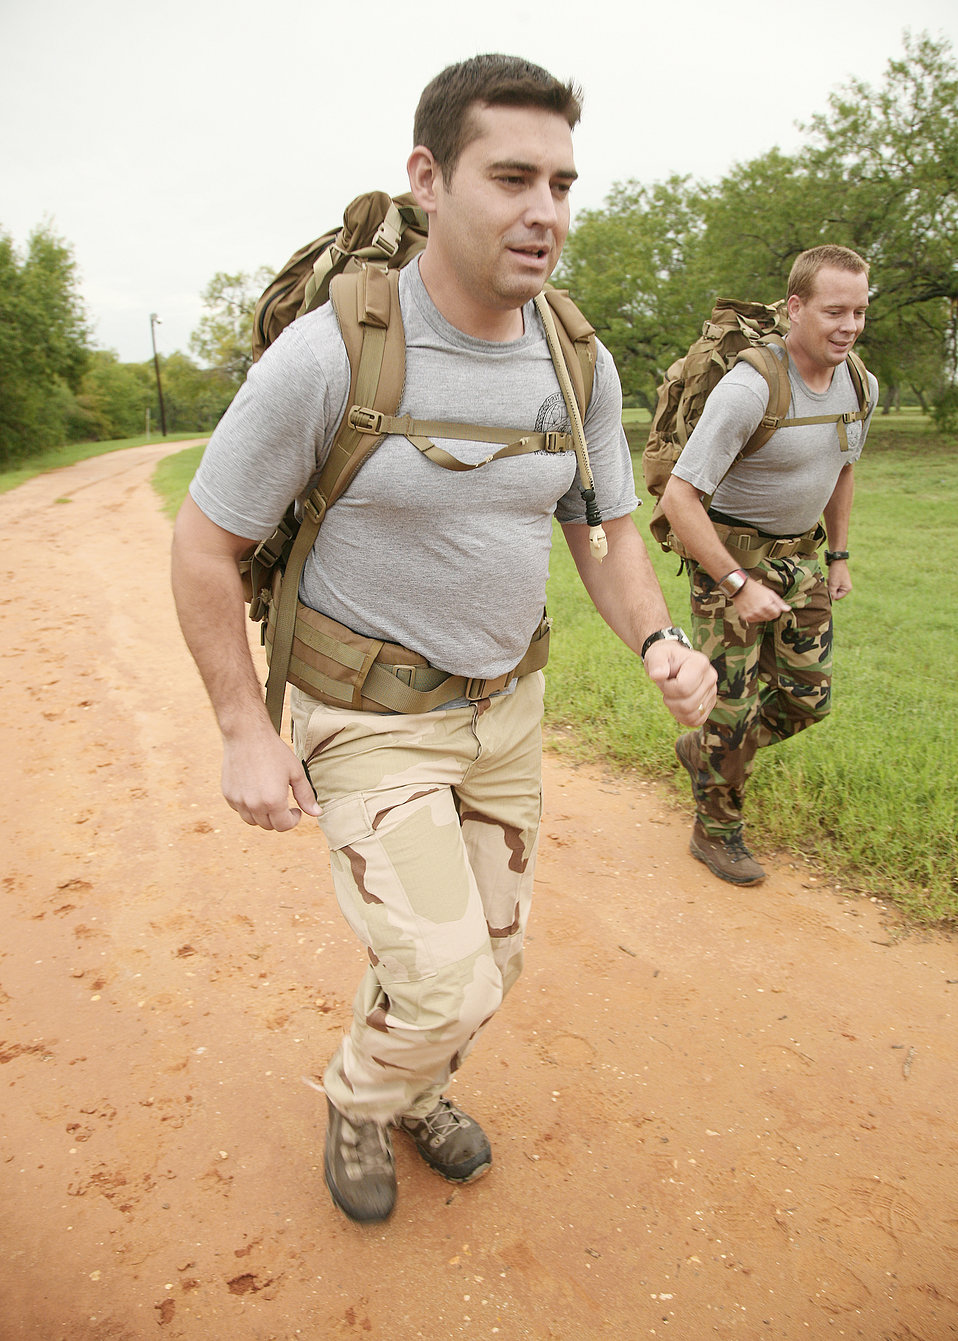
Special tactics Airmen honor fallen teammates

1st Lt. Sam Schindler (left) and Master Sgt. Kenneth Huhman prepare at Lackland Training Annex, Texas, for the 150 mile ruck march they will be doing to honor 12 fallen special tactics Airmen killed in Iraq and Afghanistan. Lieutenant Schindler and Sergeant Huhman are both with the 342nd Training Squadron at Lackland AFB.